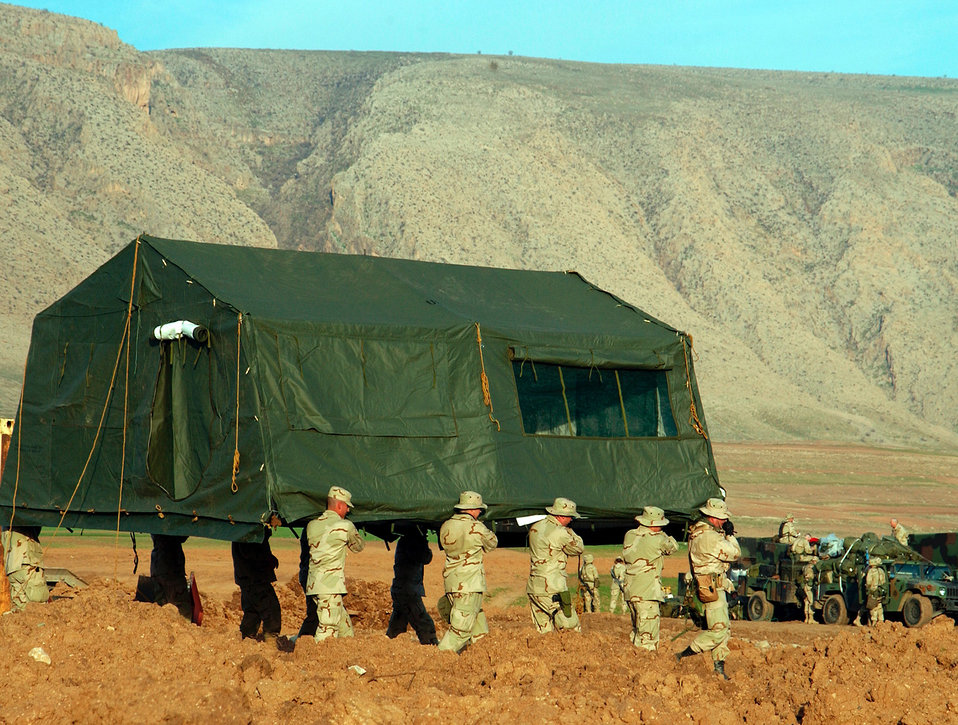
Moving to a new neighborhood

OPERATION IRAQI FREEDOM -- Members of the 86th Expeditionary Contingency Response Group move a tent at an air field in northern Iraq March 31. Members of the group parachuted into the airfield March 27 with the U.S. Army's 173rd Airborne Brigade.